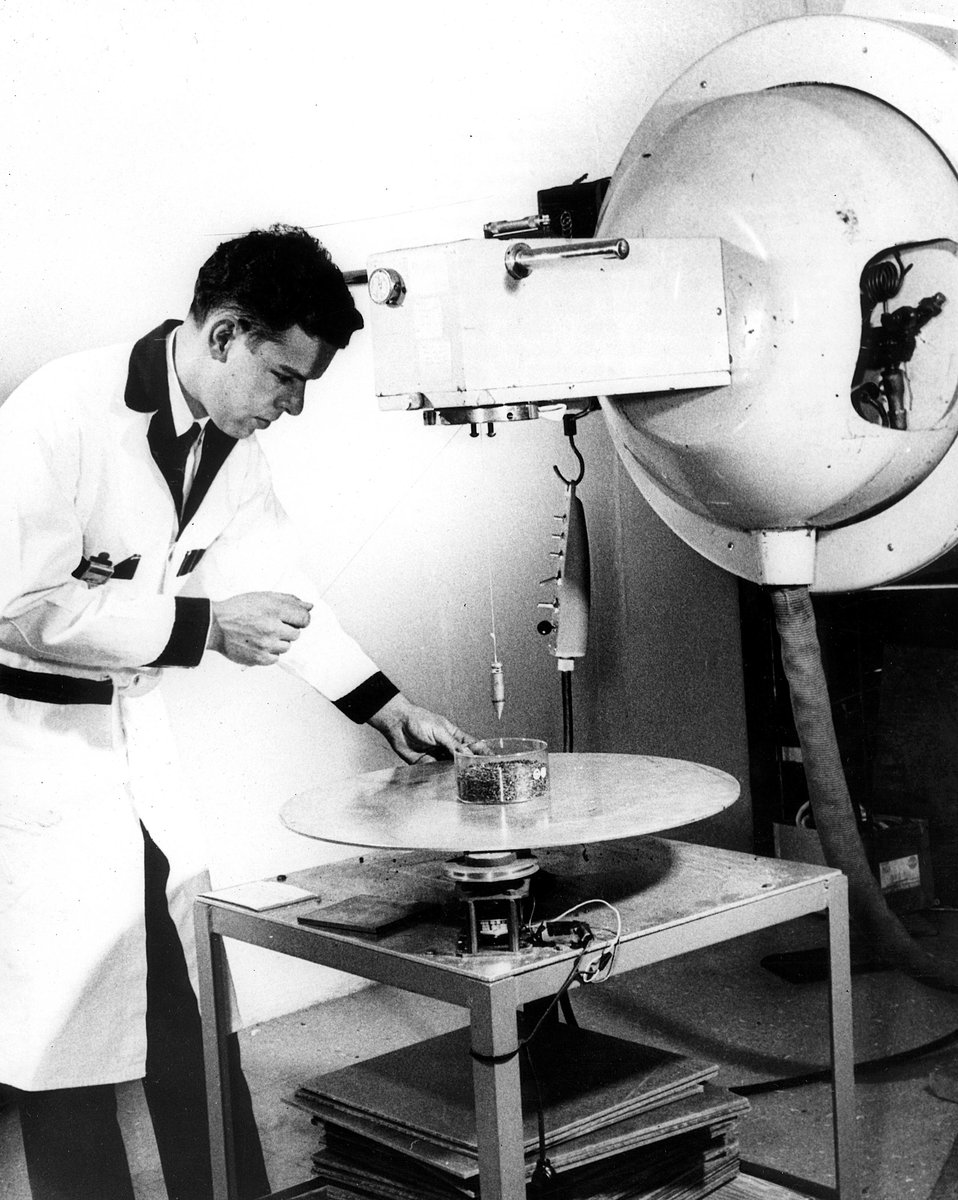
Biology Department technician preparing to irradiate seed sample in an x-ray machine.